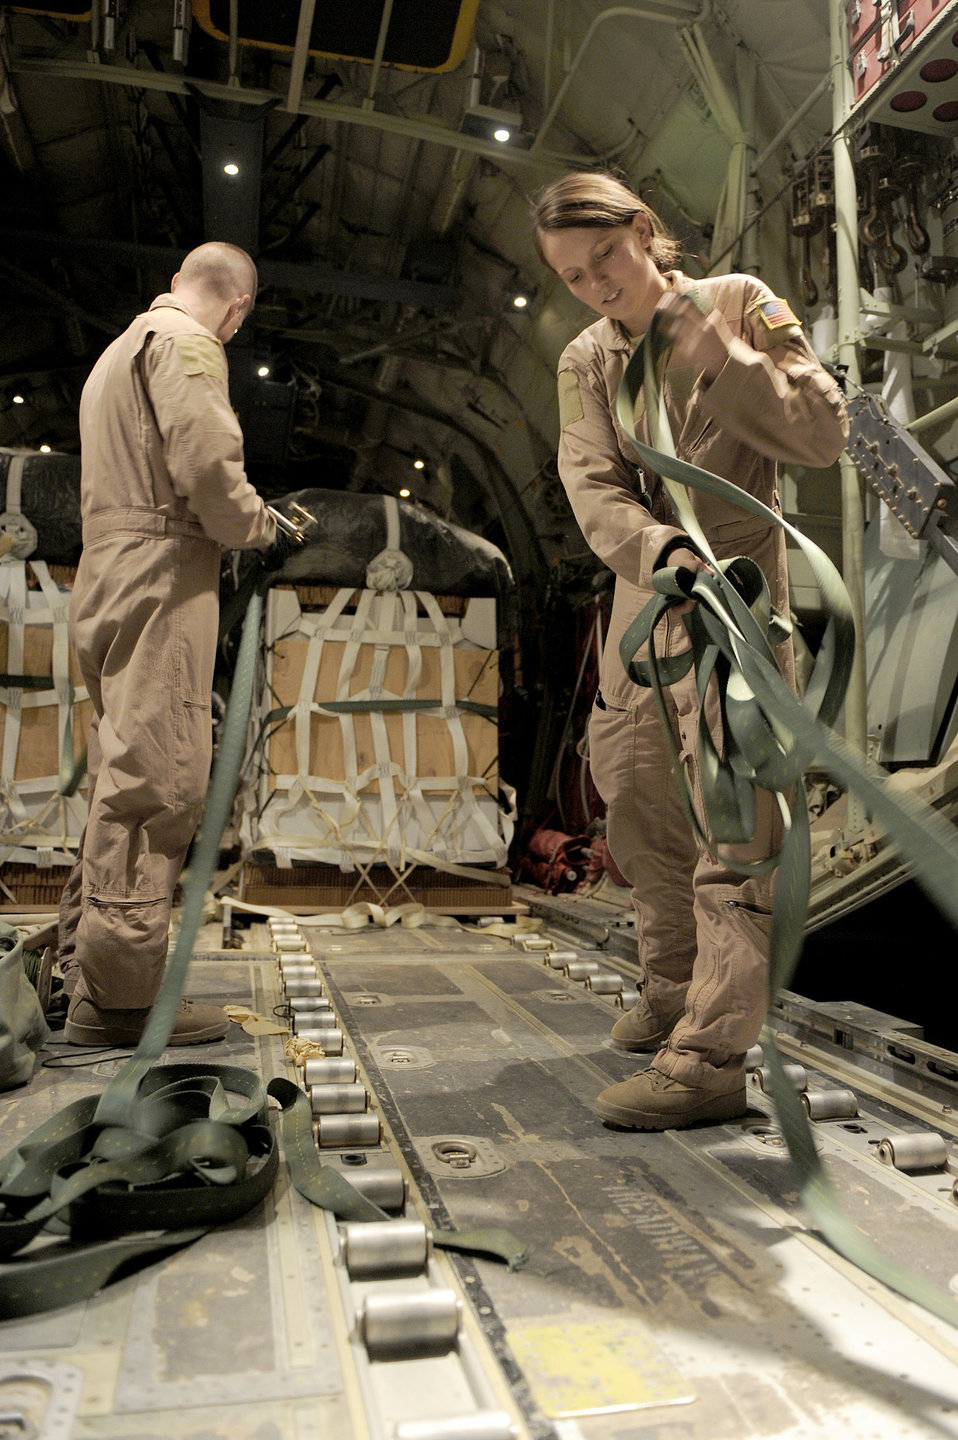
Supplies to remote Afghanistan bases

Staff Sgt. T.J. Grover and Airman 1st Class Rachael Orazine prepare to strap bundles in a C-130J Super Hercules Oct. 7, 2010, at Kandahar Airfield, Afghanistan. Sergeant Grover and Airman Orazine are loadmasters assigned to the 772nd Expeditionary Airlift Squadron.